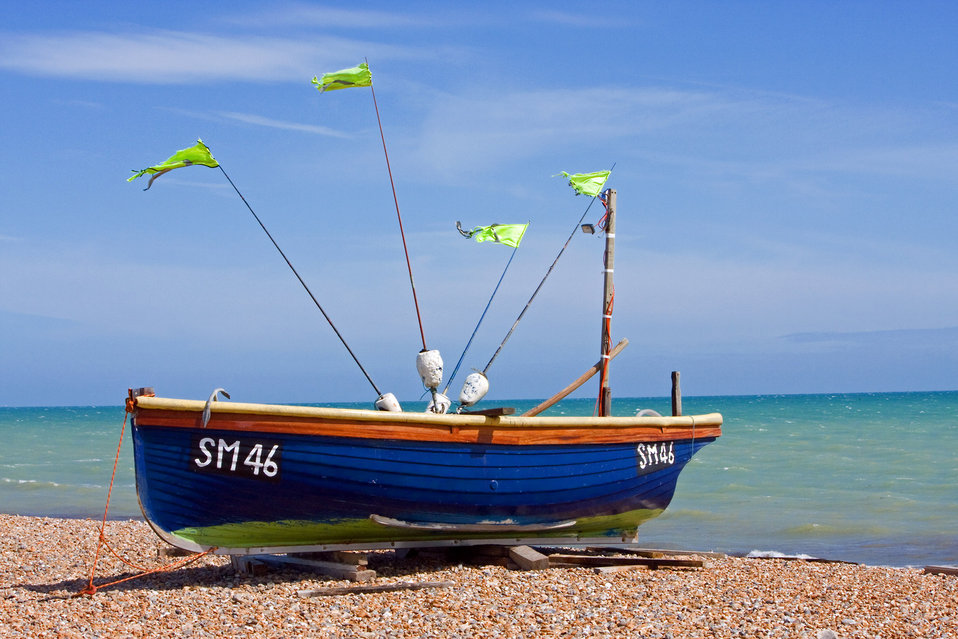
Wooden fishing boat

Blue wooden fishing boat on the beach.